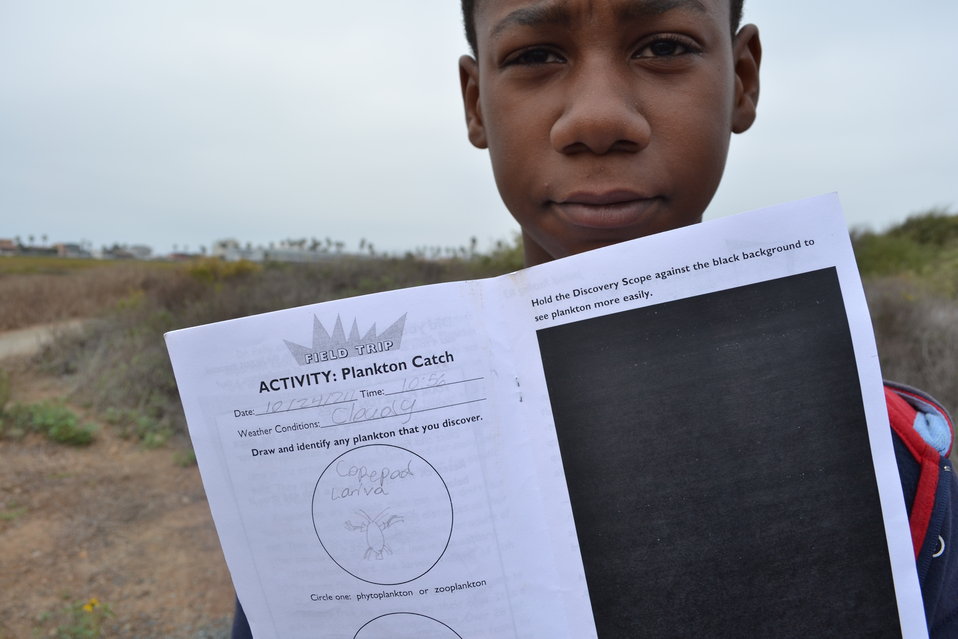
What does your plankton look like?

After finding plankton through a magnifying glass, students drew a picture of what they saw in their Estuary Explorers Activity Book. Estuary Explorers is a curriculum for environmental education on TJNWR